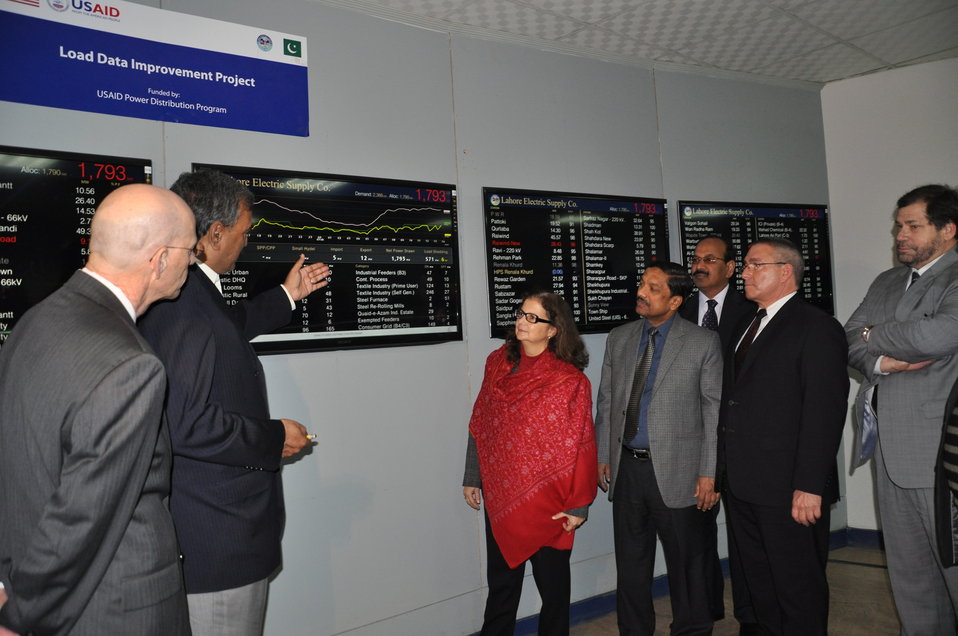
U.S. Improves LESCO’s Capacity to Reduce Load-Shedding

Lahore, February 6, 2014: Marking a milestone in U.S. support to Pakistan’s energy sector, U.S. Consul General Nina Maria Fite inaugurated the Power Distribution Control Center at the Lahore Electric Supply Company (LESCO). The LESCO center was established with support from the U.S. Agency for International Development (USAID) and will enable LESCO to monitor the flow of power through their grid stations. The new meters will verify actual power flow and reduce unplanned load-shedding.

“This project will provide real-time access to electricity load data to managers of Pakistan’s electricity grid and help LESCO overcome unscheduled load-shedding,” said Consul General Fite. “The U.S. Government and the American people are committed to assisting the Government of Pakistan to improve the power distribution system throughout Pakistan. We partner with power distribution companies to improve their operations, reduce losses, and ultimately make sure that the Pakistani people have a more reliable power supply.”

Unplanned load-shedding is one of the leading challenges in the country’s power crisis, costing Pakistan an estimated two percent of its Gross Domestic Product and 400,000 jobs in 2012. Load-shedding is a consequence of the imbalance between electricity generation and demand, and only increased generation will completely eliminate load-shedding. Unscheduled load-shedding, however, is the result of a lack of real-time energy consumption data and can be reduced by improved monitoring systems, such as the USAID project inaugurated at LESCO.

USAID’s five-year Power Distribution Program seeks to work jointly with government-owned DISCOs in Pakistan to improve their performance, reducing losses and improving revenues and customer services. Through this program and many others, the United States provides assistance to the Government of Pakistan in its efforts to reform the power sector and end the current energy shortfall.

More information about the Power Distribution Program can be found on the program’s website at pdip.pk